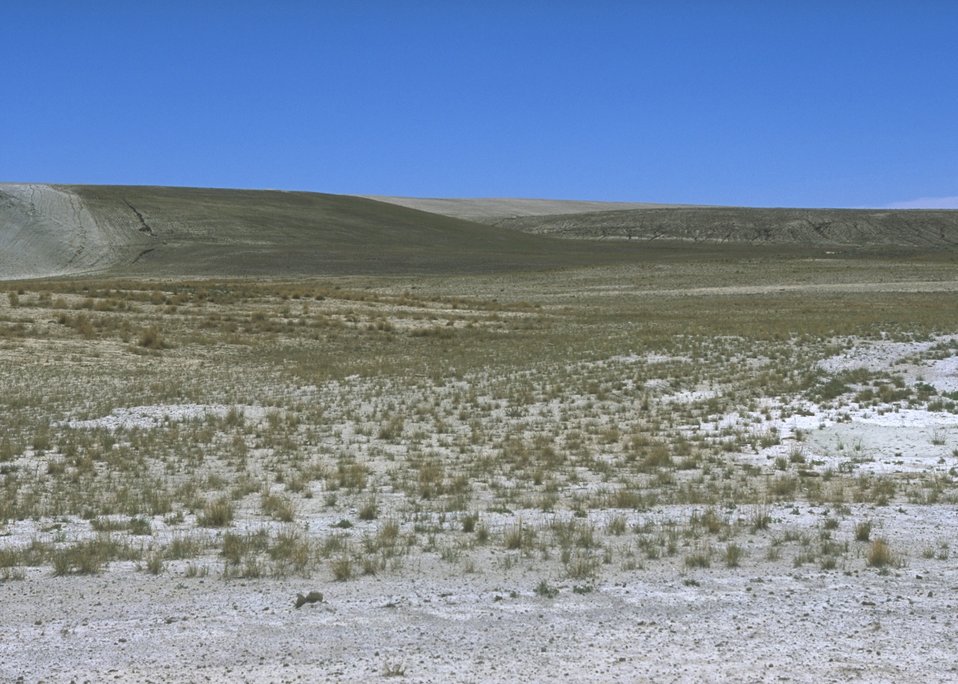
Gas Hill Abandoned Mine Lands in various stages of rehabilitation, Lander Field Office.